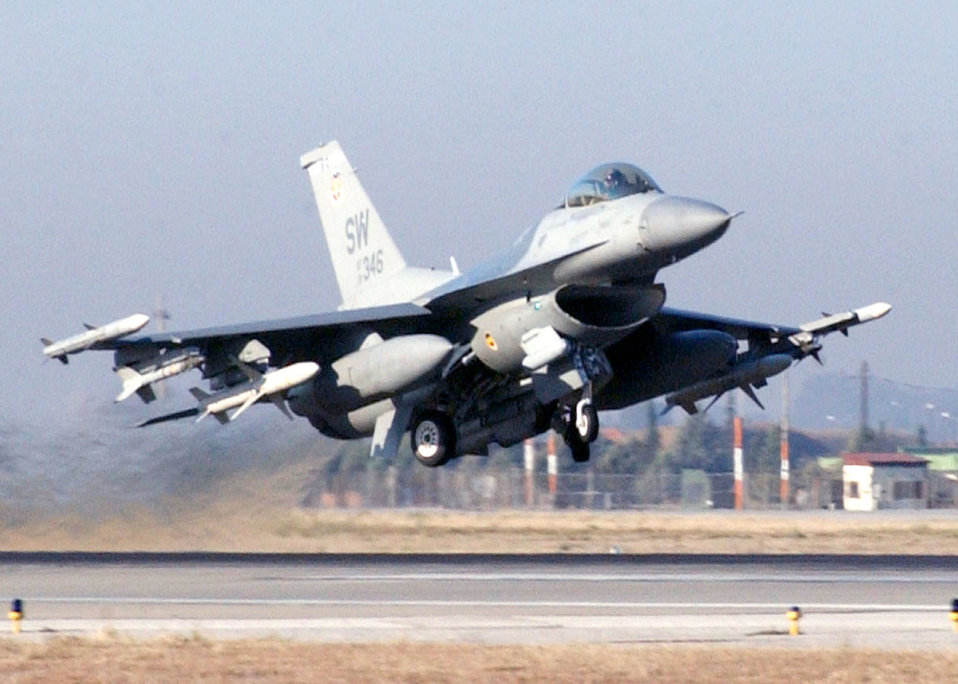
Take off

INCIRLIK AIR BASE, Turkey -- An F-16 C/J Fighting Falcon flown by a pilot from Shaw Air Force Base, S.C., takes off during an Operation Northern Watch mission here. More than 50 United Kingdom and U.S. aircraft are assigned to Operation Northern Watch enforcing the no-fly zone over northern Iraq.